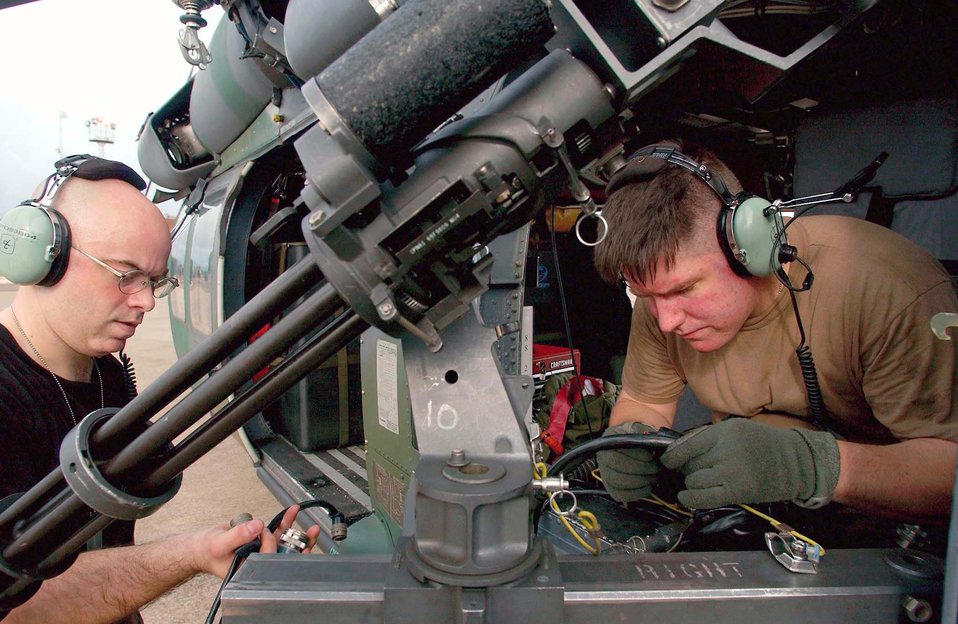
Gunsmiths

LUNGI, Sierra Leone -- Tech. Sgt. Todd Bailey (left) and Staff Sgt. Matthew Kelly work on a GAU-2 minigun mounted on an HH-60G Pave Hawk helicopter here. They are deployed from the 85th Maintenance Squadron at Naval Air Station Keflavik, Iceland.